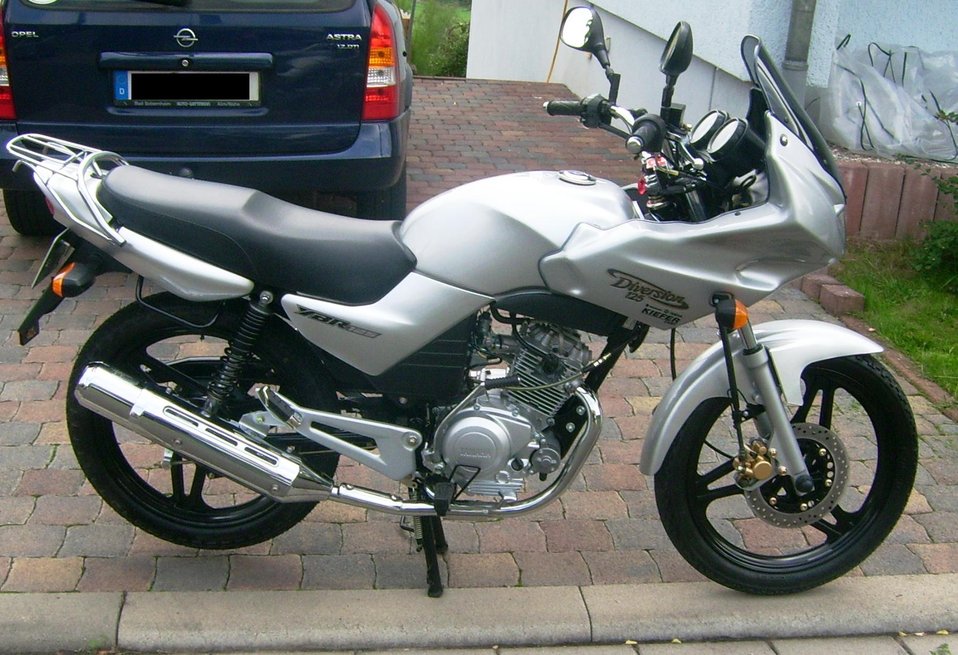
Deutsch: YBR 125 von der Seite